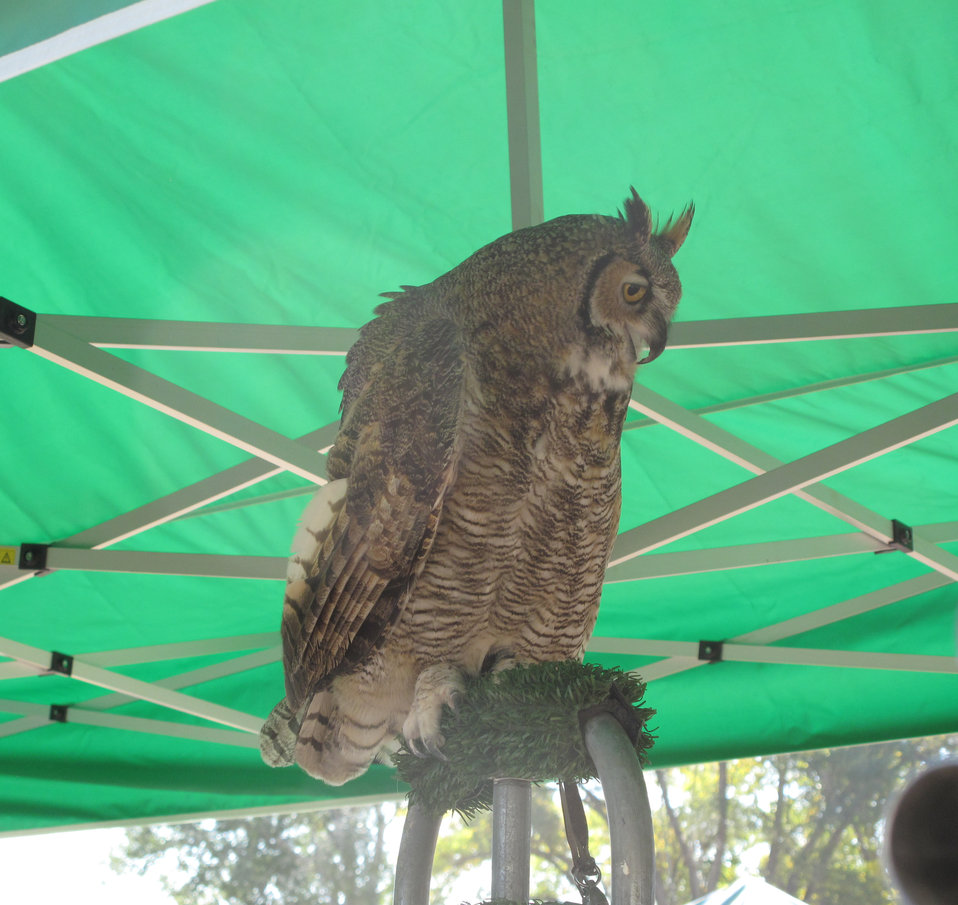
Refuge Round-Up 2010

HawkQuest